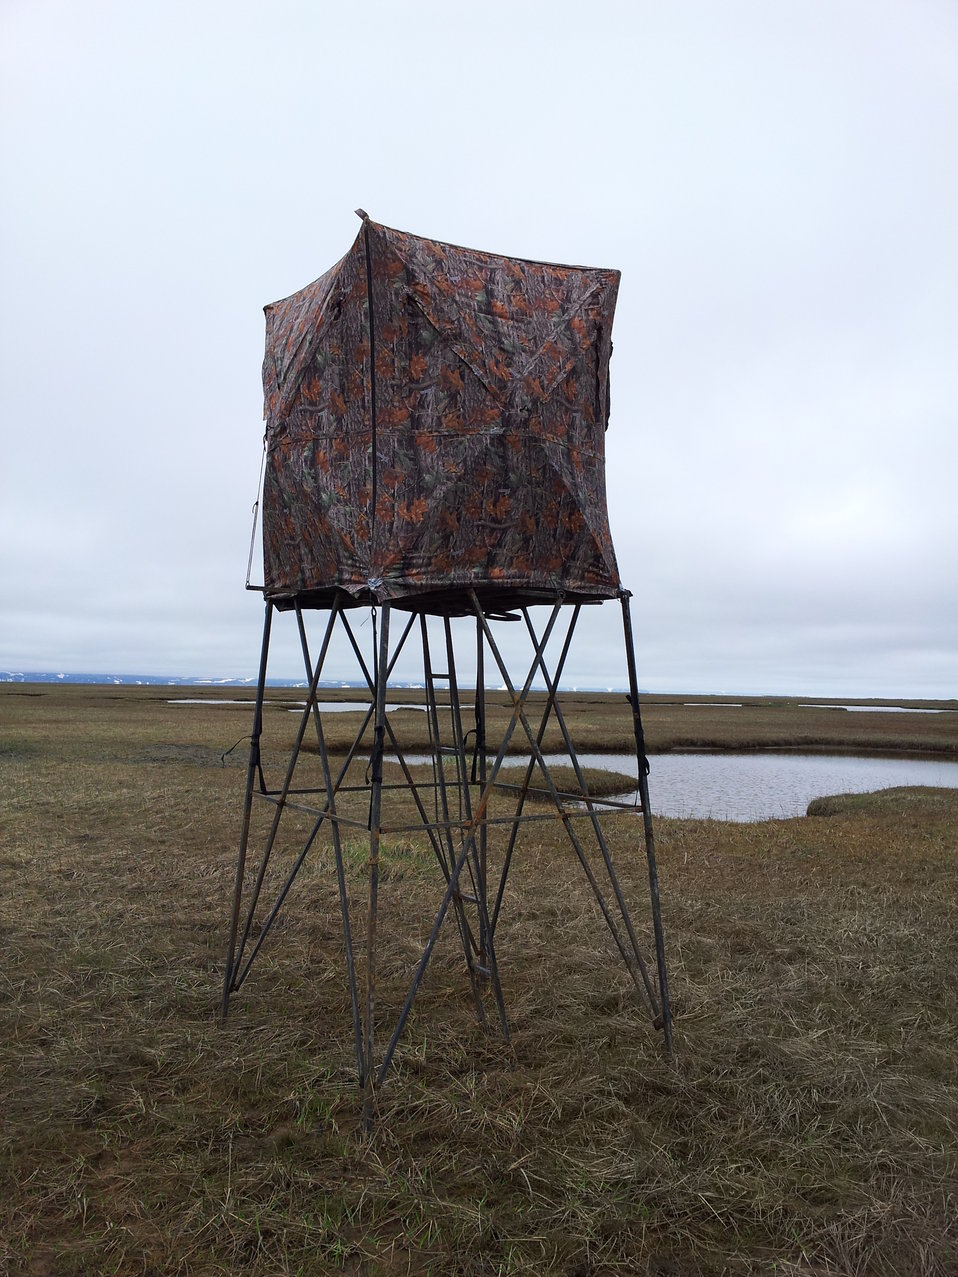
Observation Tower

Towers like this one are used to observe broods. The size of the brood, location, movement, and activities are documented.

USFWS Yukon Delta NWR